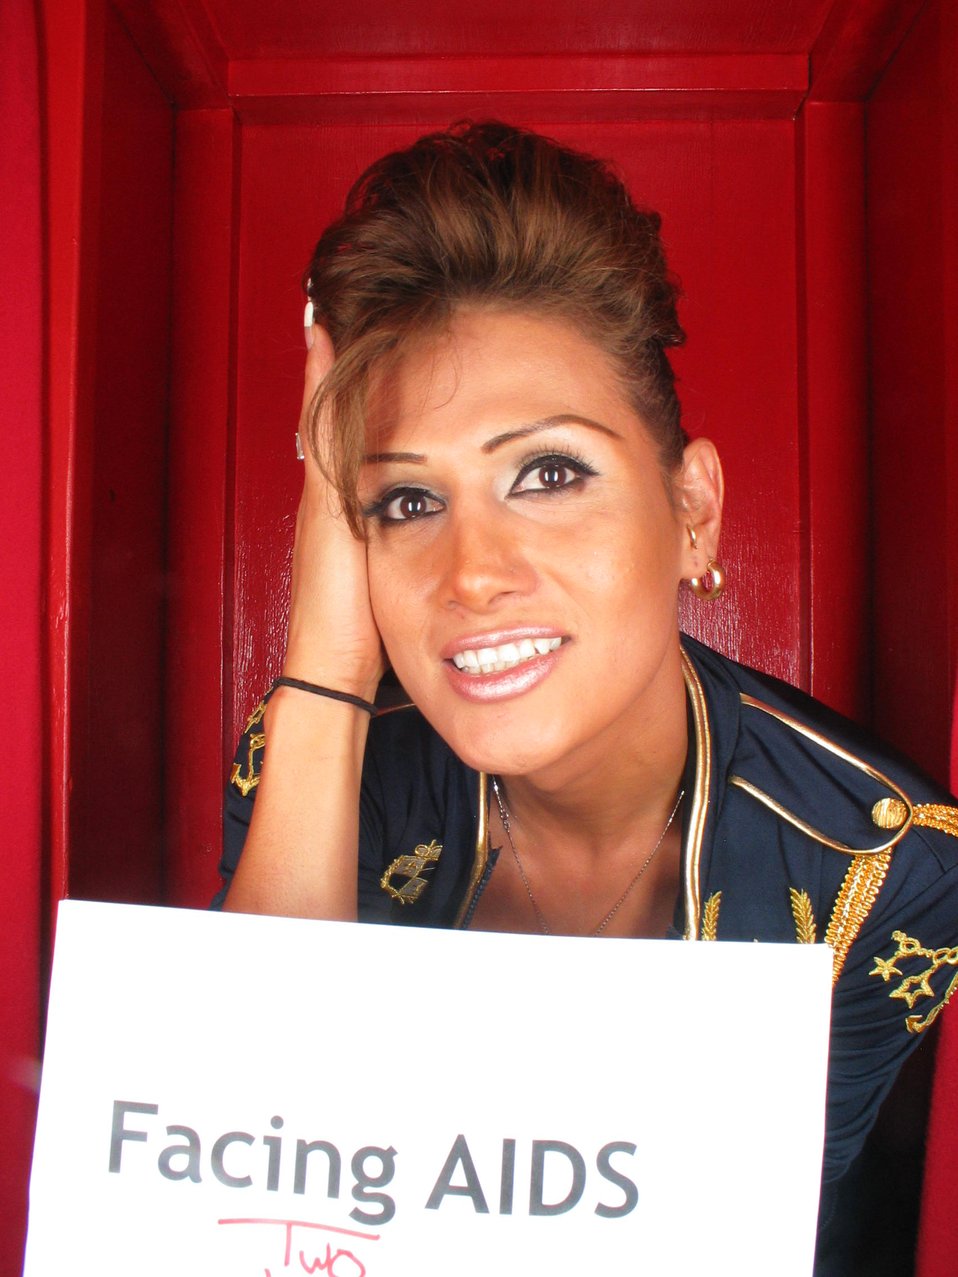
Facing AIDS